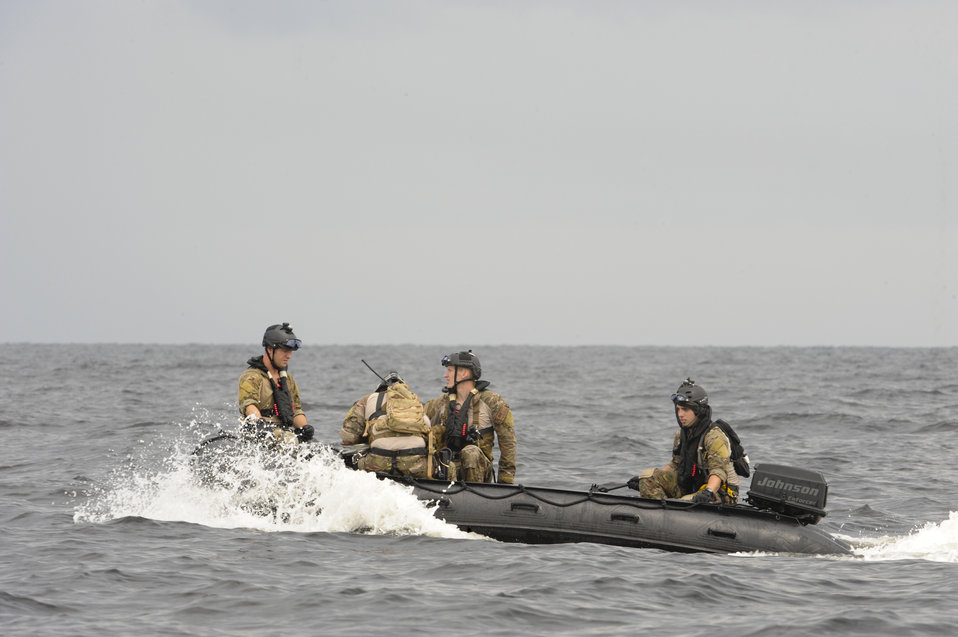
Water rescue

A team of pararescuemen with the 38th Rescue Squadron at Moody Air Force Base, Ga., heads out to a downed person’s location on a Zodiac F470 watercraft during water rescue training in the Gulf of Mexico on Aug. 14, 2012. The Zodiac F470 is an inflatable watercraft, which is constructed of multiple air chambers that allows it to stay afloat if it gets punctured.